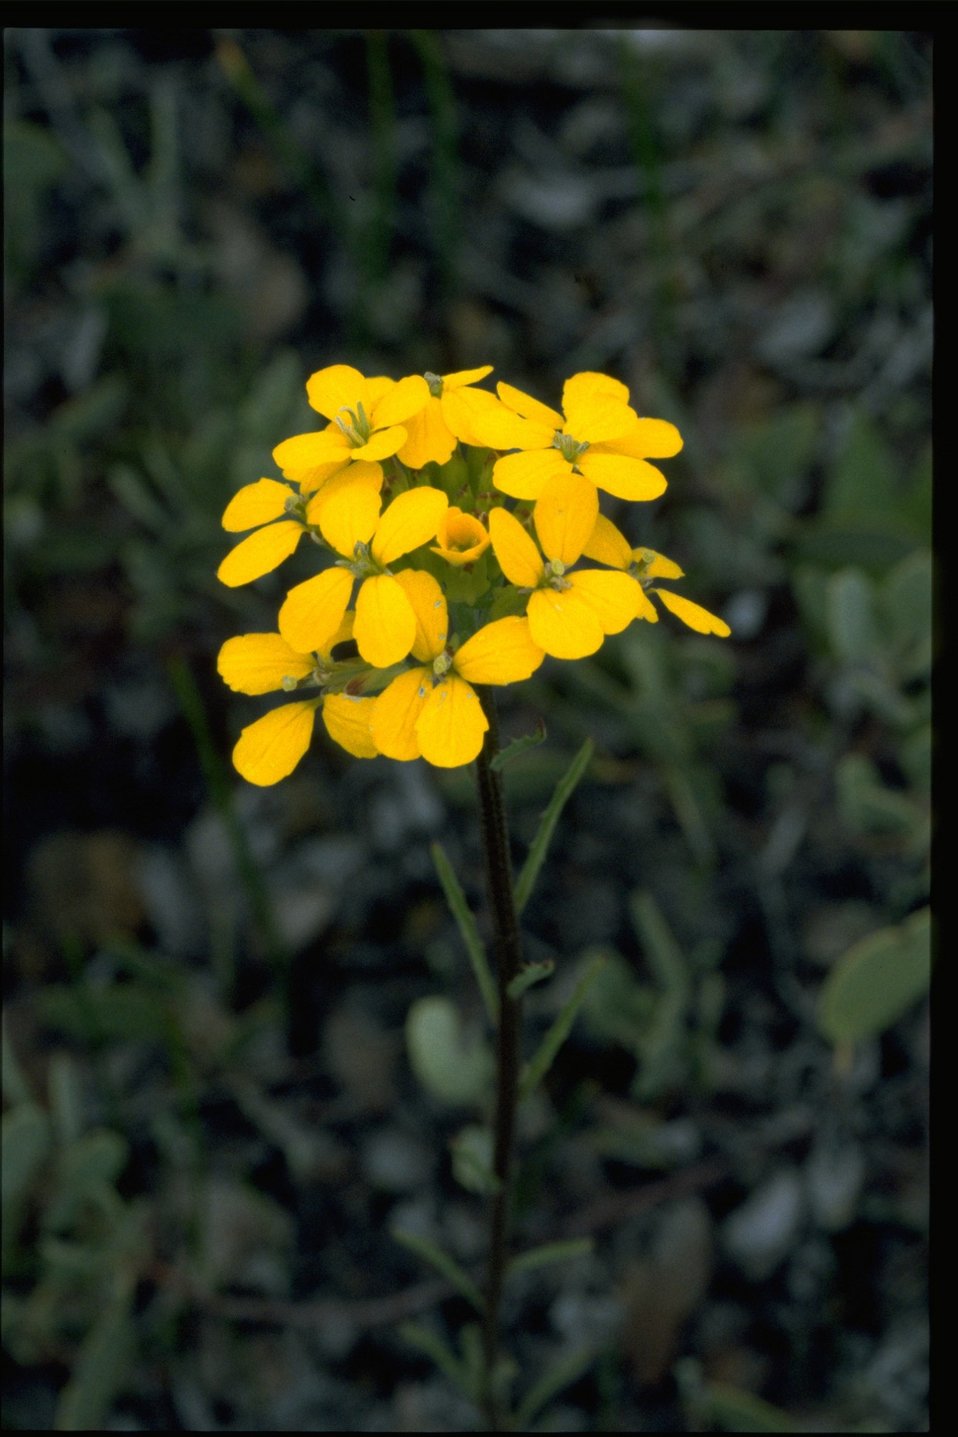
Medium shot of Erysimum capitatum.